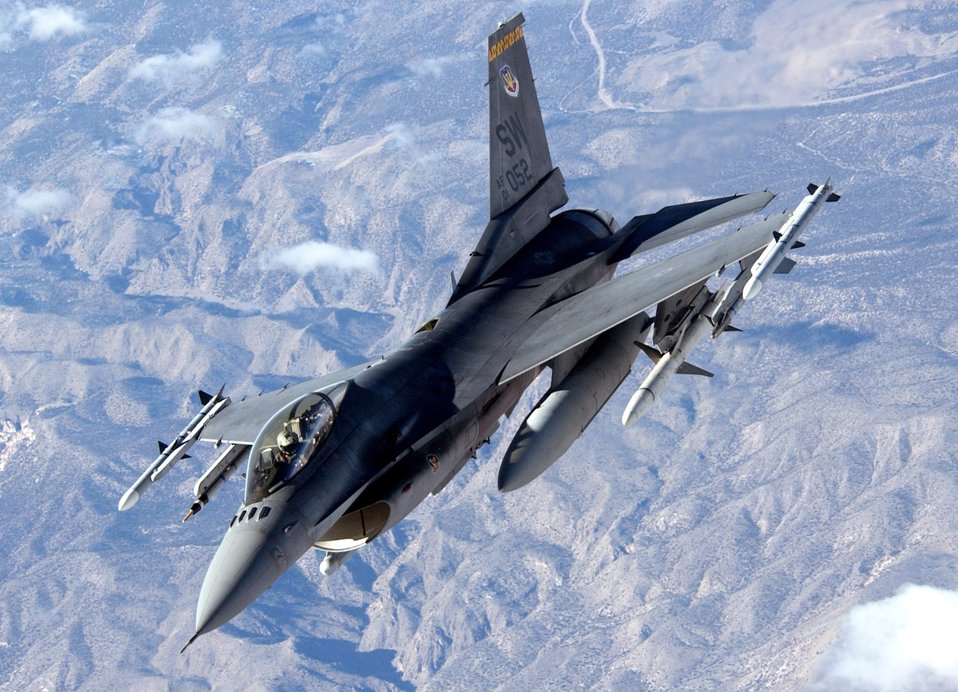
Red Flag 06-1, Nellis A.F.B.

NELLIS AIR FORCE BASE, Nev. (AFPN) -- An F-16 Fighting Falcon heads out to the ranges here Jan. 30, during Red Flag 06-1, held Jan. 21 through Feb. 18. Red Flag tests aircrews' war-fighting skills in realistic combat situations. More than 85 aircraft, including B-2 Spirit bombers are involved. The aircraft are flying missions day and night to the nearby Nevada Test and Training Range where they simulate air war. Along with the Air Force, units from the Army, Navy, Marine Corps, United Kingdom and Australia are participating. The F-16 is from the 20th Fighter Wing, Shaw Air Force Base, S.C.